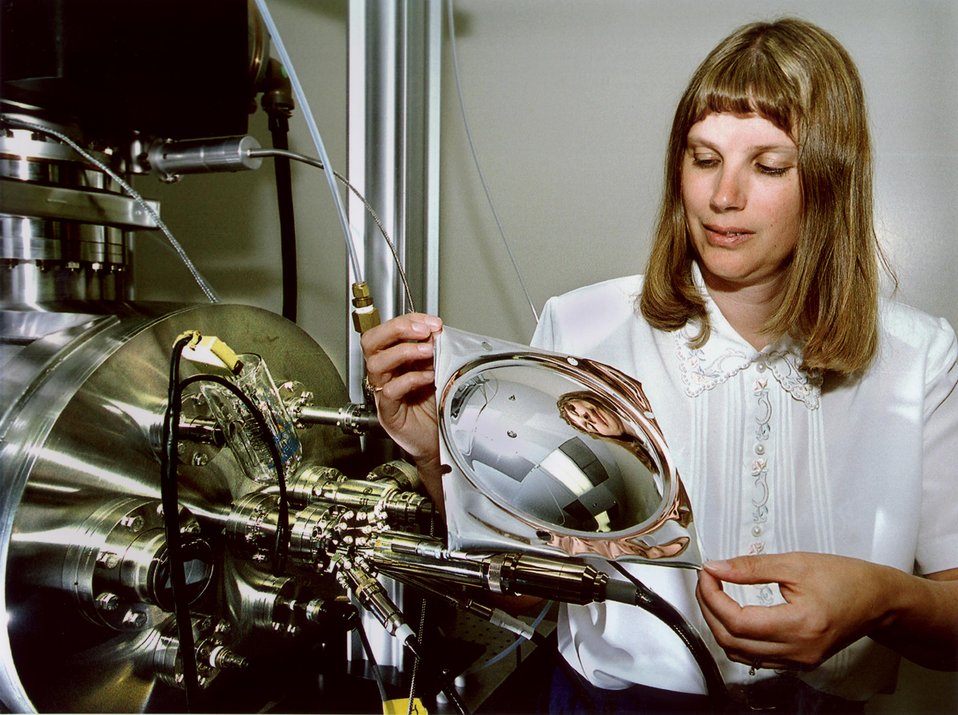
SANDIA RESEARCHER EXAMINES A THIN-FILM ULTRA-LIGHT PIEZOELECTRIC MATERIAL.

SANDIA RESEARCHERS ARE STUDYING THE CONTROL OF THE THIN-FILM ULTRA-LIGHT PIEZOELECTRIC MATERIAL FOR FUTURE USE IN SPACE TELESCOPES AND SURVEILLANCE SATELLITES.